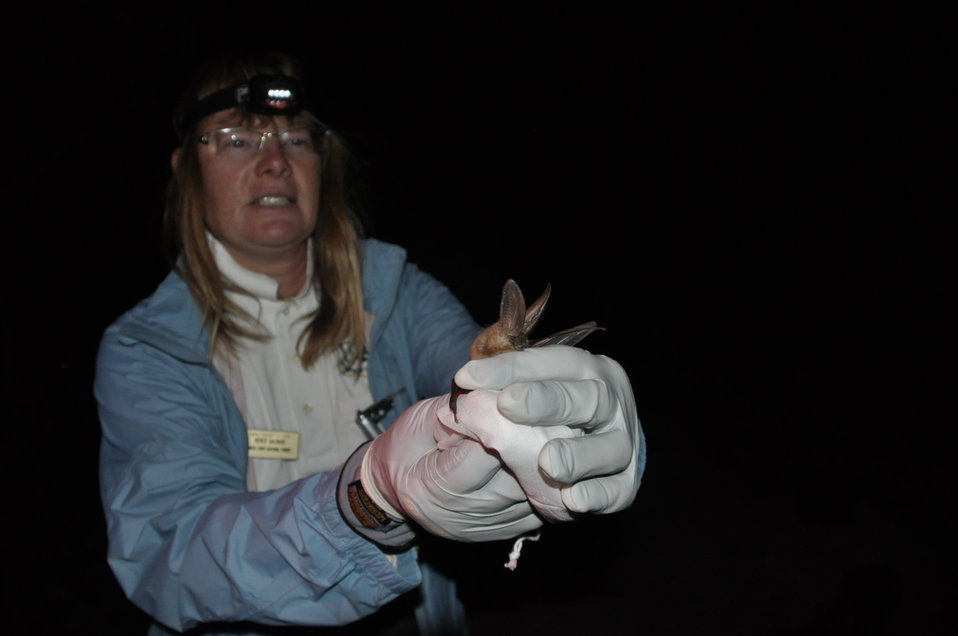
Wildlife biologist prepares to release bat

Biologist prepares to release bat